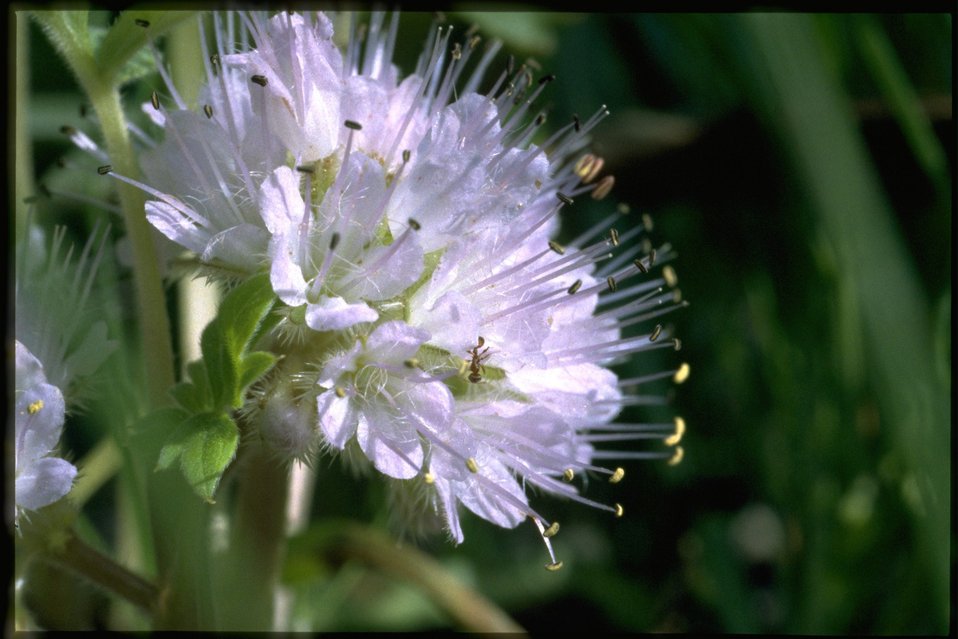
Closeup shot of Dwarf Waterleaf, Hyderophyllum Capitatum, wildflower.